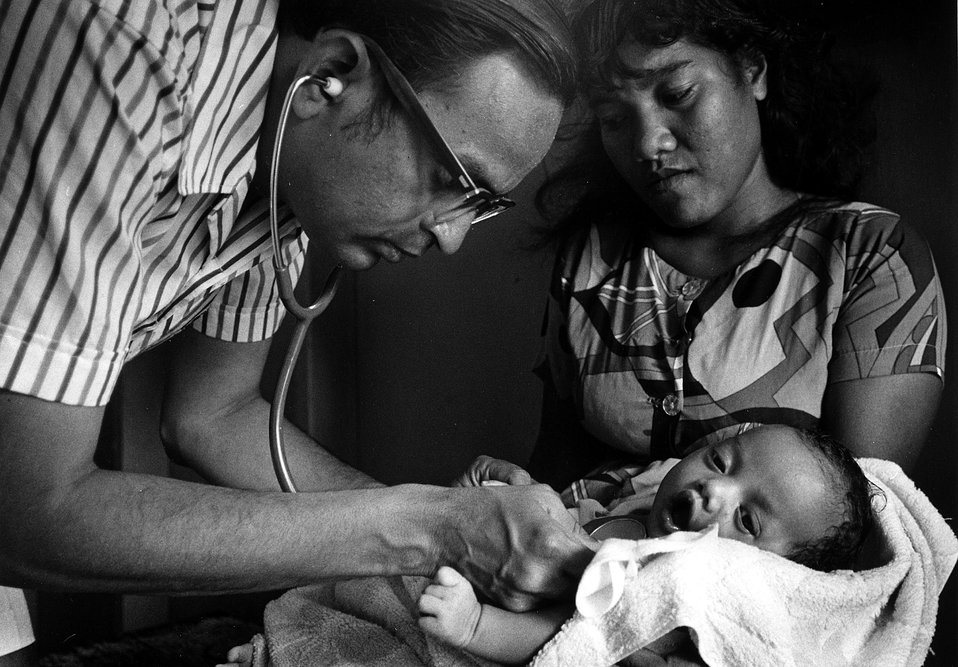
Medical team conducting annual medical examinations of Marshallese people who were exposed to radioactive fallout from an atmospheric nuclear weapons test in 1954

.